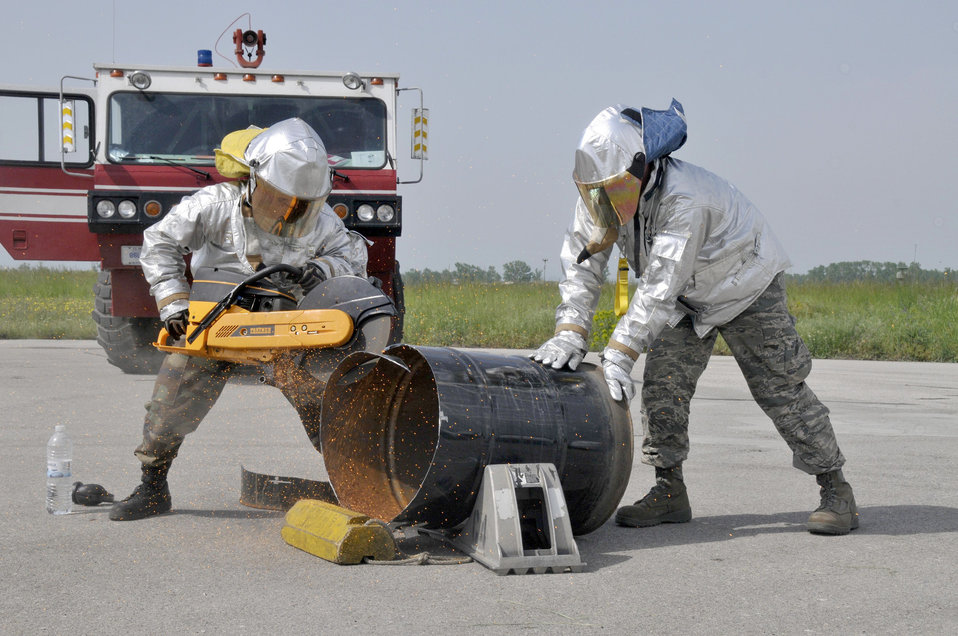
U.S. and Bulgarian airmen train together

Airmen 1st Class Phil Crews and Jared Williams make a burn barrel May 13, 2010, at Graf Ignatievo Air Force Base, Bulgaria. Making the burn barrel allows the firefighters to maintain proficiency on the K-12 rescue saw. The Airmen are in Bulgaria as part of Sentry Gold, a joint U.S. and Bulgarian exercise. Airmen Crews and Williams are firefighters from the 48th Civil Engineer Squadron.